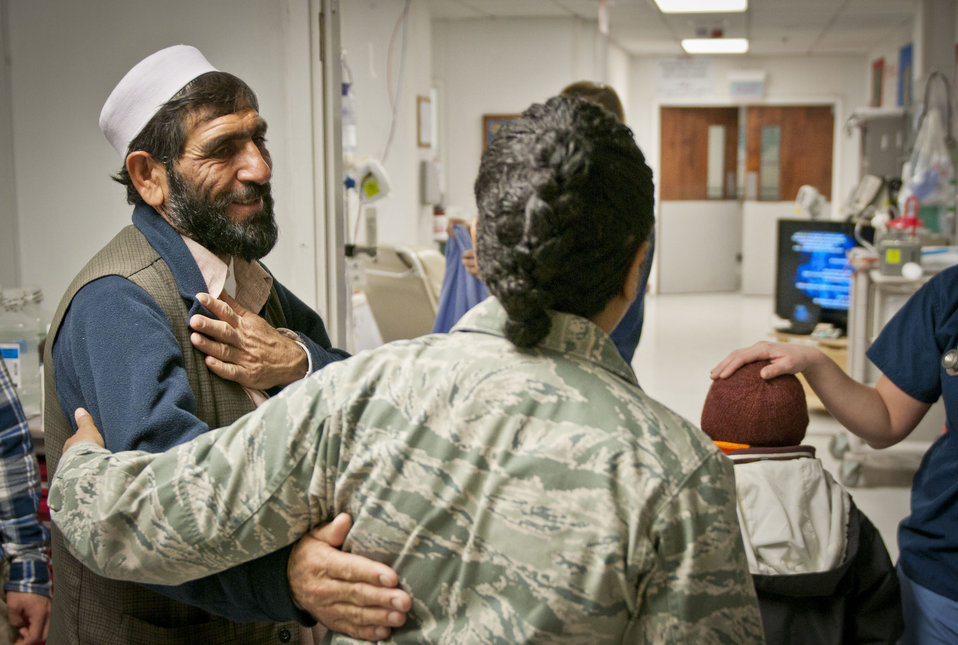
Craig Joint-Theater Hospital's longest resident inspires staff

Mohabullah, the father of Najibullah, expresses his thanks to the hospital staff Jan. 9, 2012, as Najibullah is escorted out of the Craig Joint-Theater Hospital in Afghanistan. Najibullah was severely injured in the stomach July 20, 2011, in Ghazni province and had been under the hospital's care ever since.